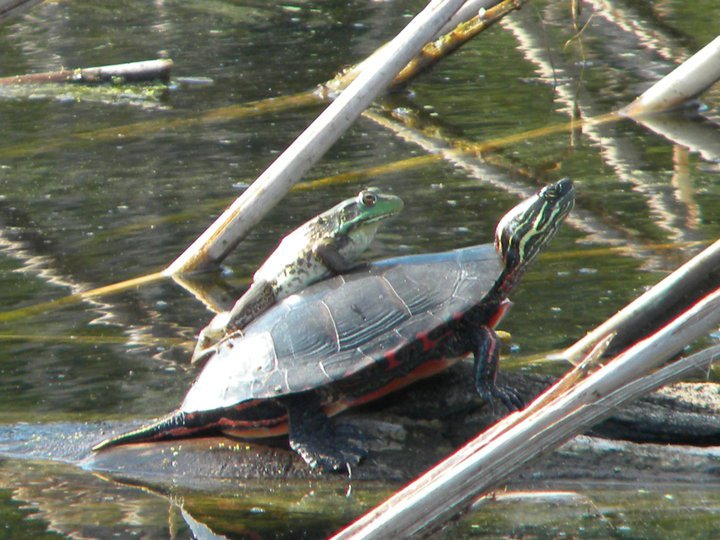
turtle & frog

Horicon Marsh
Horicon National Wildlife Refuge, WI
Summer 2011